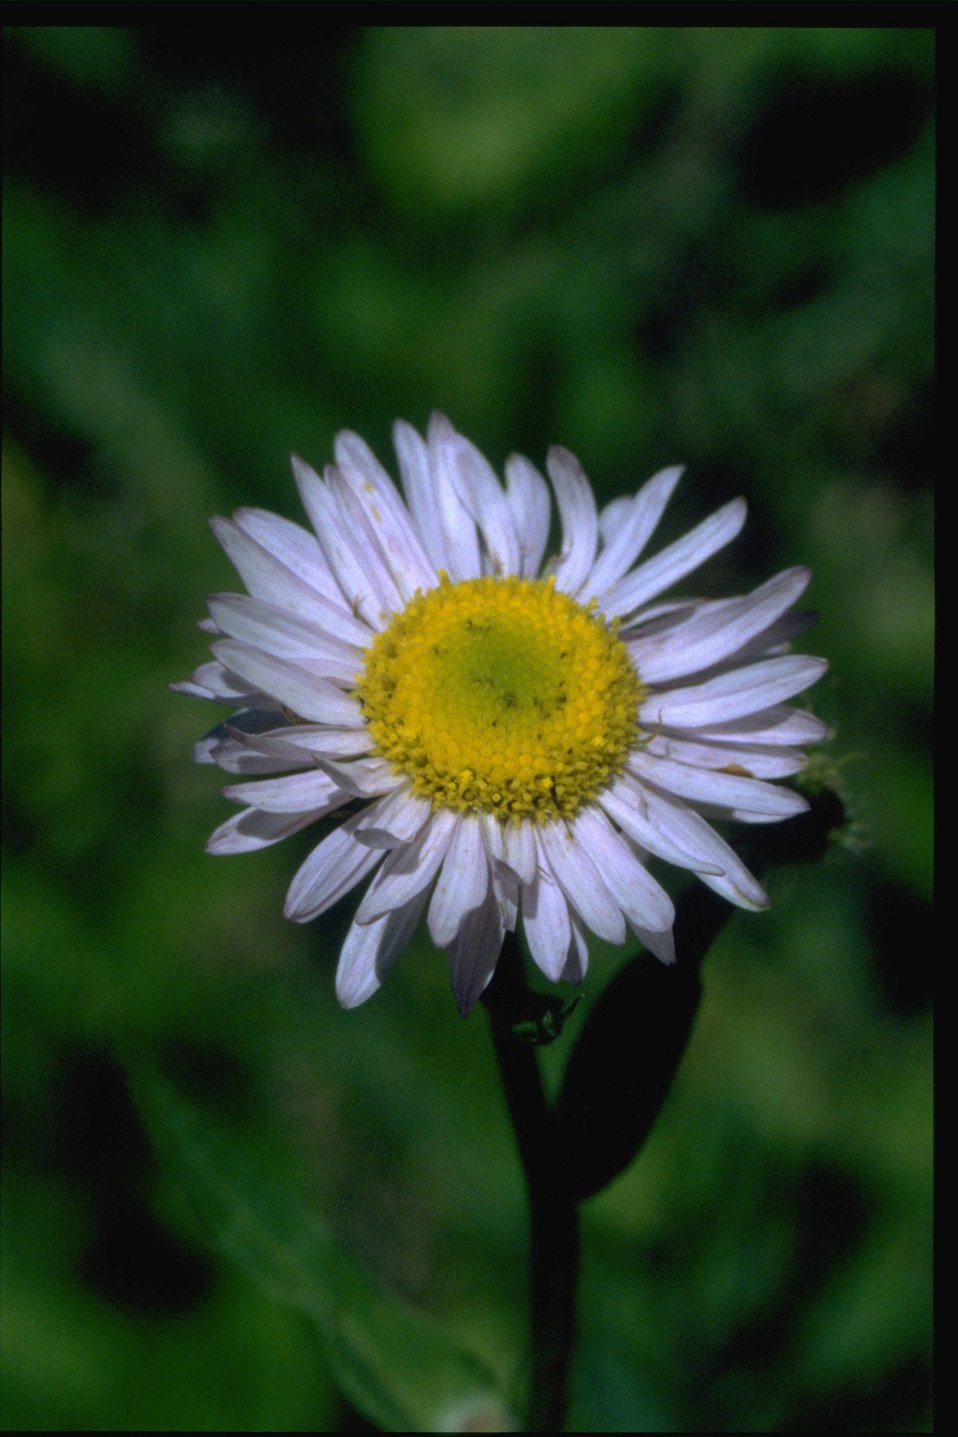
Closeup shot of wildflower (Asteraceae).